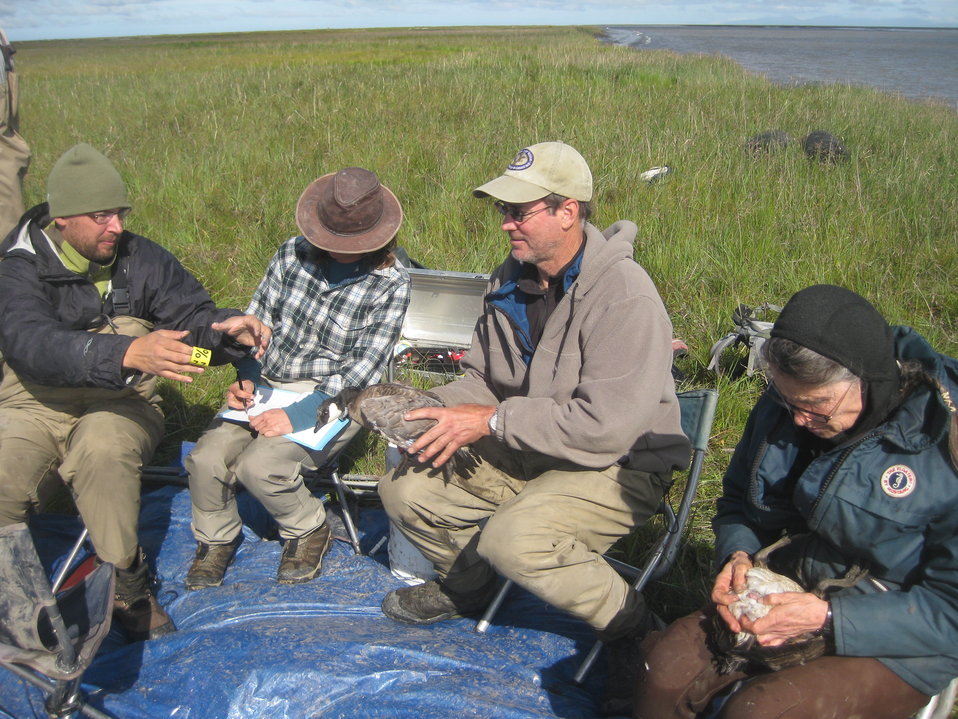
Let the banding begin

A group of biologists, volunteers, biotechs, refuge staff, migratory bird management staff, etc joined forces to band and collar cackling cackling geese on the Yukon-Kuskokwim Delta.

USFWS Yukon Delta NWR